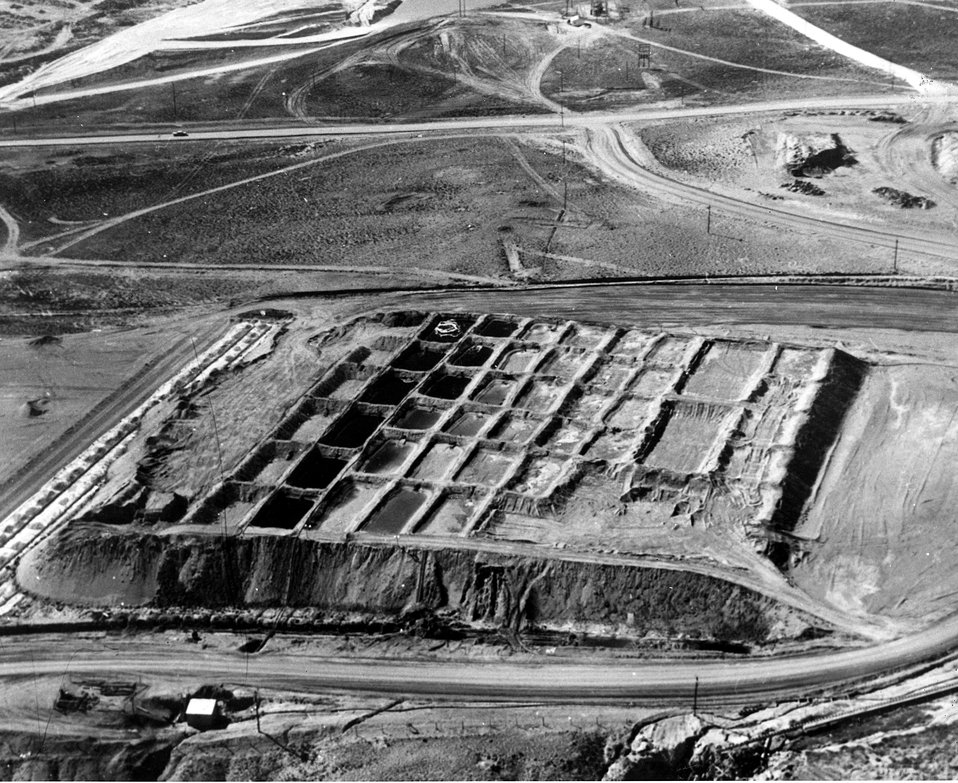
This open-air method of recovering uranium is operated by Lucky Mc Uranium Division, Utah Mining and Construction Co., in the Gas Hills area of Wyoming. c. 1963